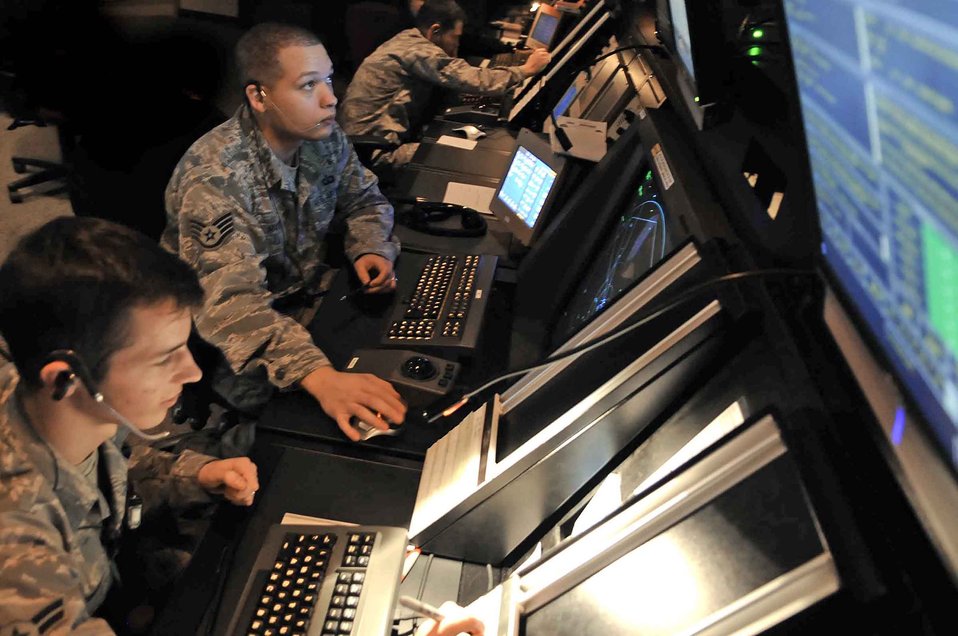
Ellsworth officials launch digital airport surveillance radar

Airman 1st Class Ryan Anger and Staff Sgt. Jacob Martin manage air traffic Oct. 14, 2009, at Ellsworth Air Force Base, S.D. Airman Anger and Sergeant Martin are 28th Operations Support Squadron air traffic controllers.